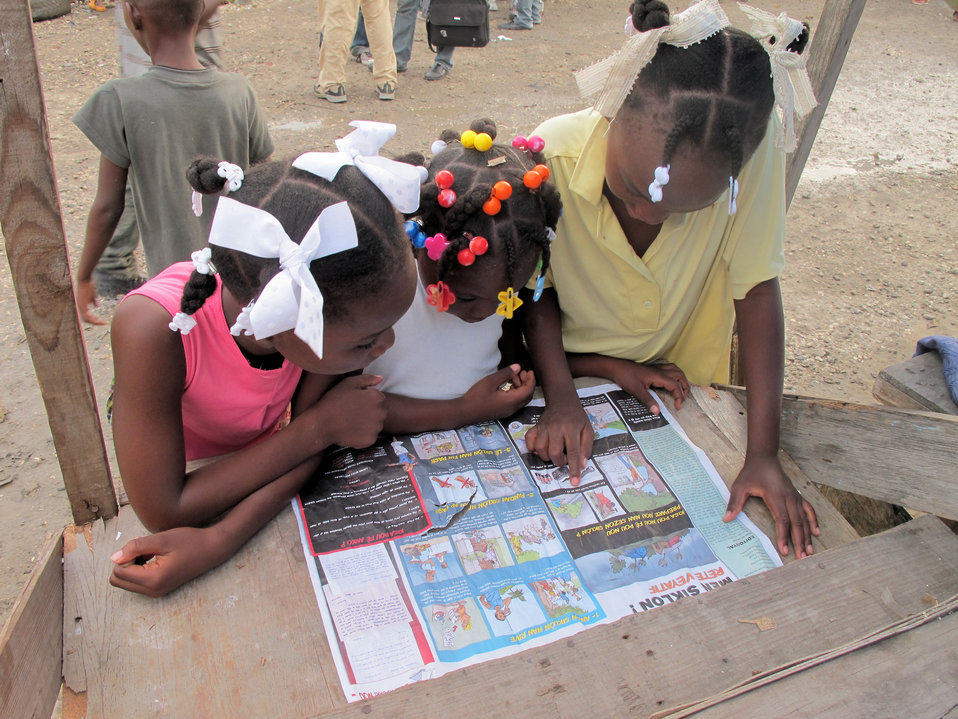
Haiti, One Year Later

In cooperation with other U.S. agencies and with support from Congress, Treasury contributed $120 million to the Haiti Reconstruction Fund (HRF), a multi-donor fund administered by the World Bank, which is being used to fund priority areas defined by the Government of Haiti including education. Three Haitian girls read a brochure about cholera prevention.